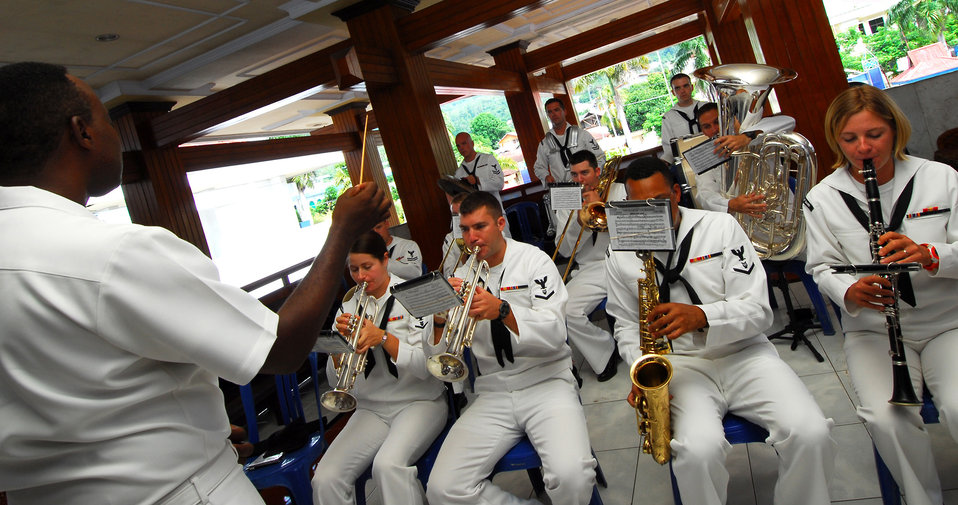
The U.S. Pacific Fleet Band plays during the closing ceremony for the Pacific Partnership 2010 visit to Ternate, Indonesia, on July 24, 2010. The Military Sealift Command hospital ship USNS Mercy (T-AH 19) is in the North Maluku Islands conducting Pacific Partnership 2010, the fifth in a series of annual U.S. Pacific Fleet endeavors conducted in Indonesia as a disaster relief exercise aimed at strengthening regional partnerships.